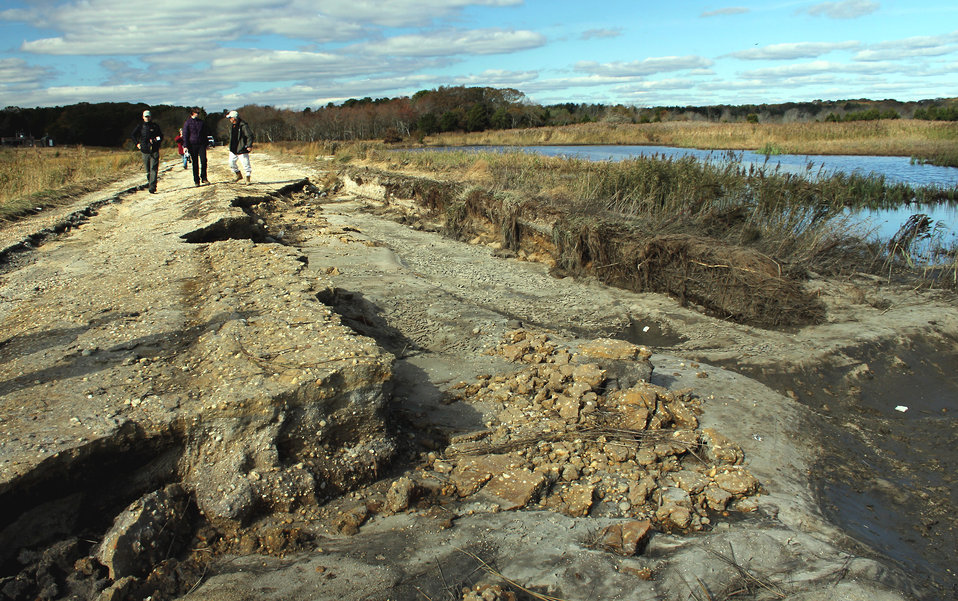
Superstorm Sandy damages to the Edwin B. Forsythe National Wildlife Refuge Wildlife Drive (NJ)

The south dike of the wildlife drive was seriously damaged by Sandy.